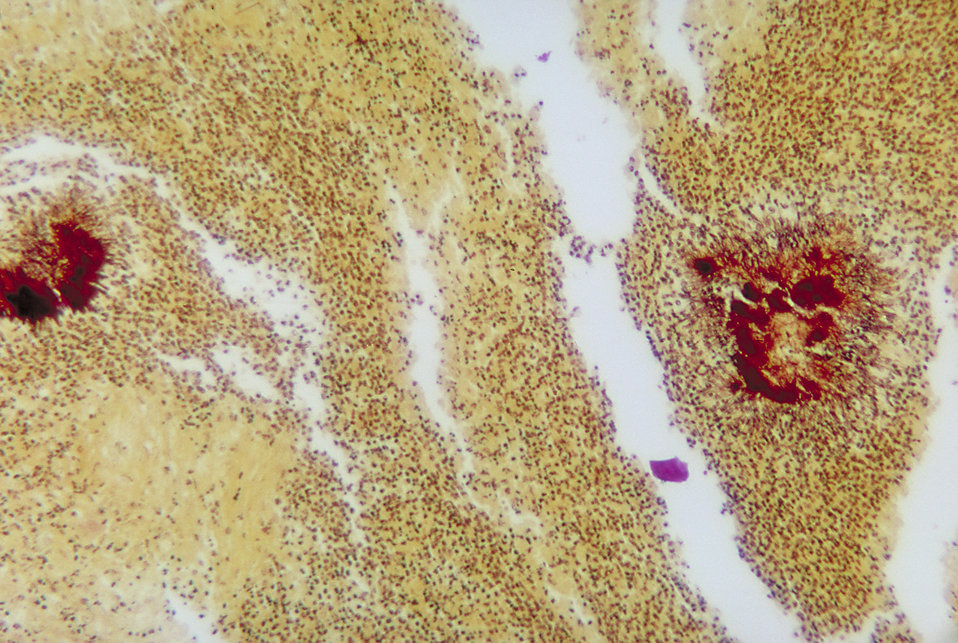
A photomicrograph of testicular tissue revealing histopathologic changes due to actinomycosis, using Brown and Brenn Gram-stain.